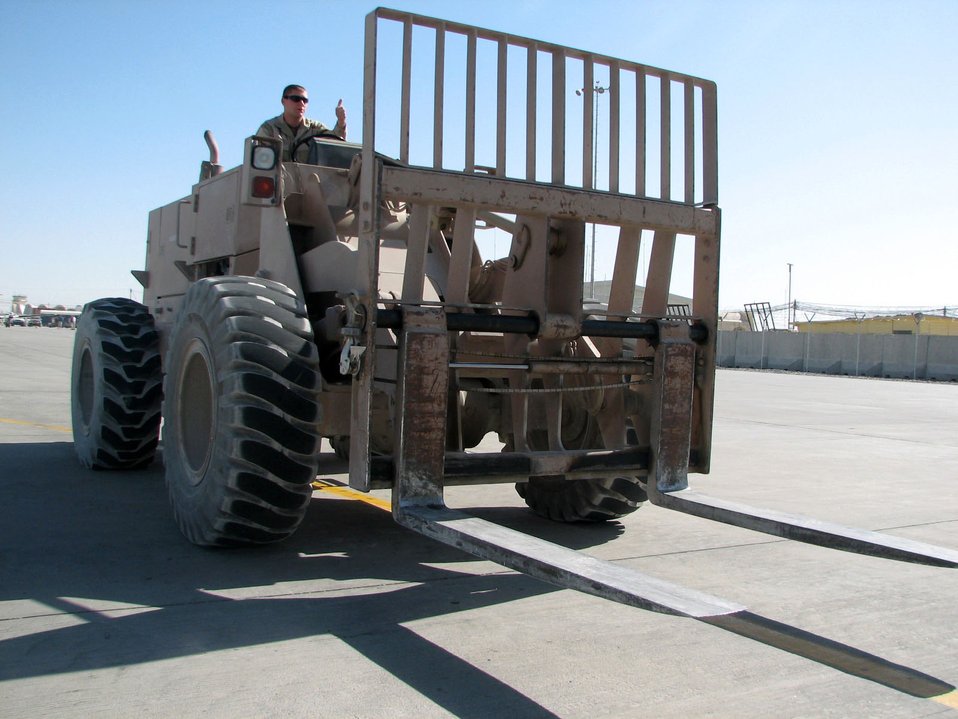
Keeping it moving in Kandahar

Airman 1st Class James Nalley prepares to offload cargo from a C-130 Hercules Oct. 12 at Kandahar Airfield, Afghanistan. Airman Garcia is a member of the 455th Air Expeditionary Wing, whose mission is to provide close-air support, mobility, intelligence, surveillance and reconnaissance in support of the war on terrorism.